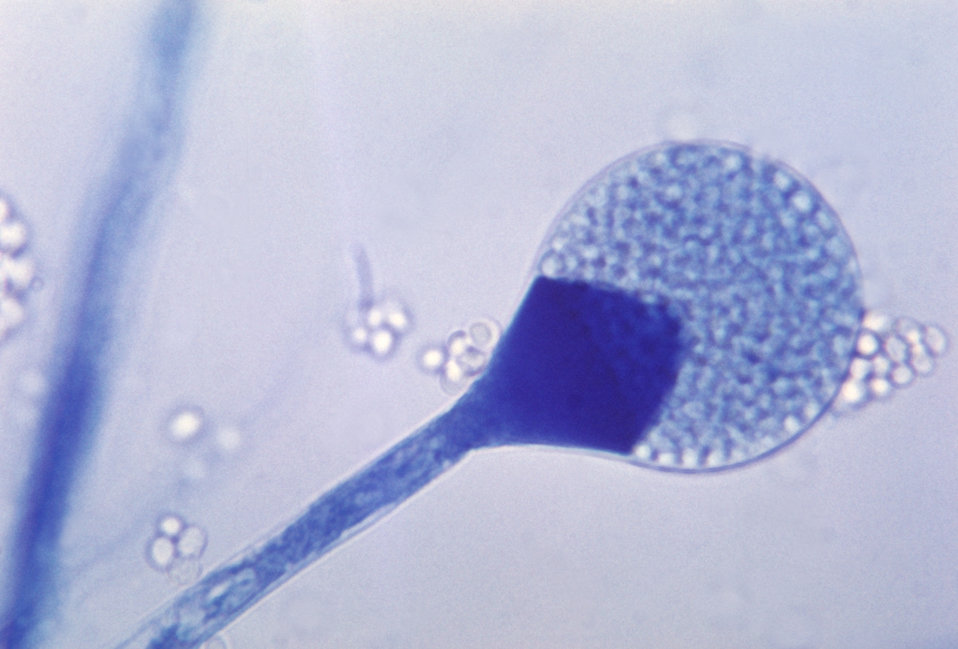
This photomicrograph shows a close-up of a mature sporangium of a Mucor sp. fungus.